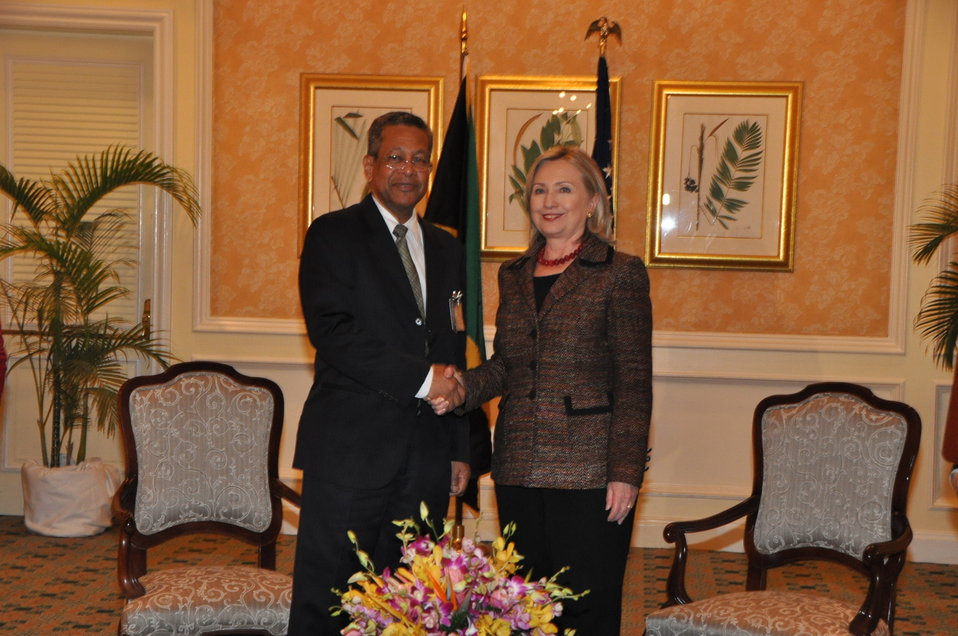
Secretary Clinton Meets With Jamaican Foreign Minister Baugh

U.S. Secretary of State Hillary Rodham Clinton meets with Jamaican Foreign Minister Kenneth Baugh in Montego Bay, Jamaica, on June 22, 2011.